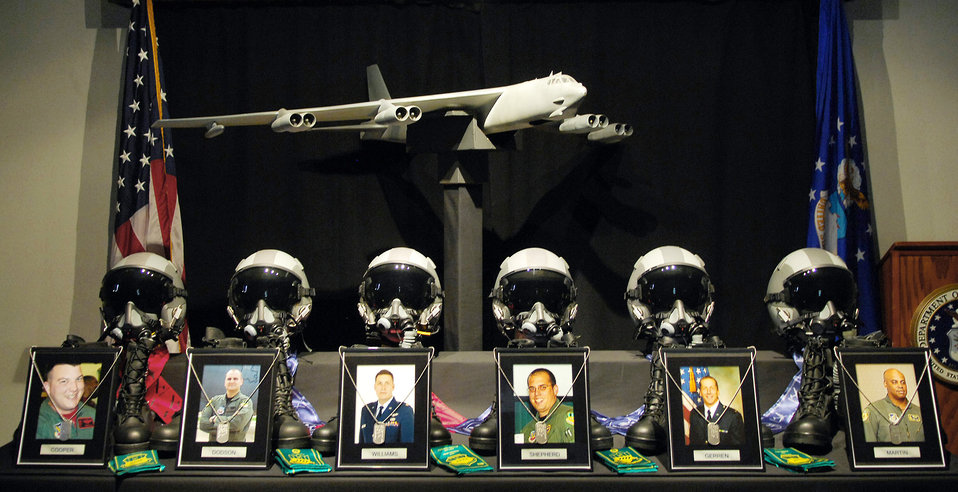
Remembering RAIDR 21

A memorial was created at Barksdale Air Force Base, La., to remember the six crew members of RAIDR 21 who died in a crash July 21, 2008, while deployed to Andersen AFB, Guam. The call-sign of their B-52 Stratofortress was RAIDR 21.